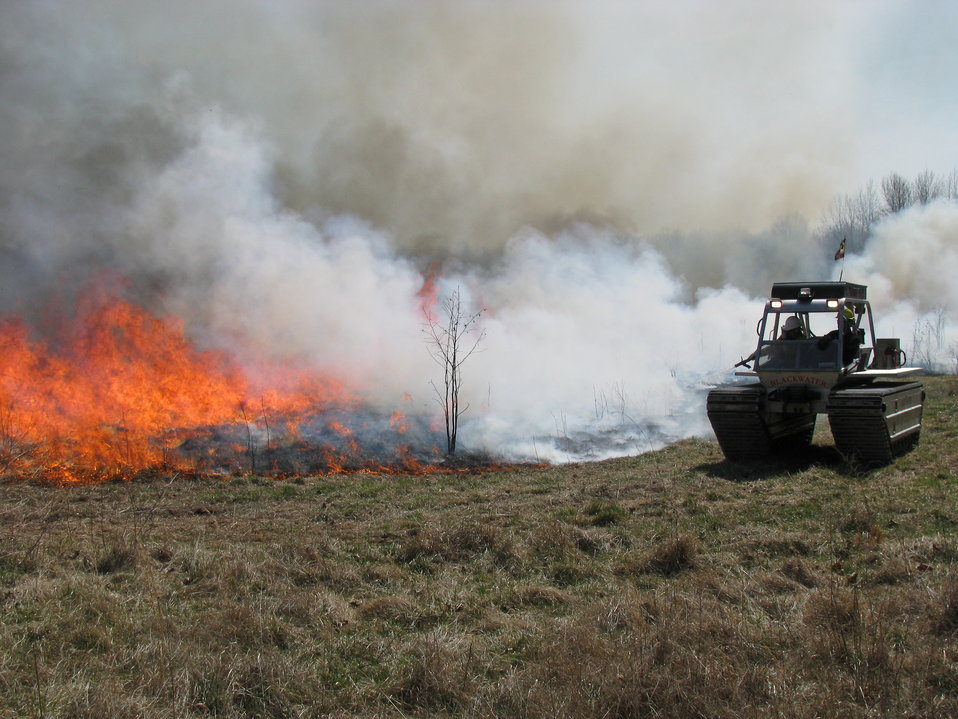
Marshmaster Holds the Line

Laurel, Maryland, April 14, 2012: A specialized, tracked, low ground pressure vehicle has a water tank on board to help cool the controlled burn perimeter. The burn, at Patuxent Research Refuge, was to maintain native grasslands, remove woody vegetation, and control invasive species such as Korean Lespedeza.